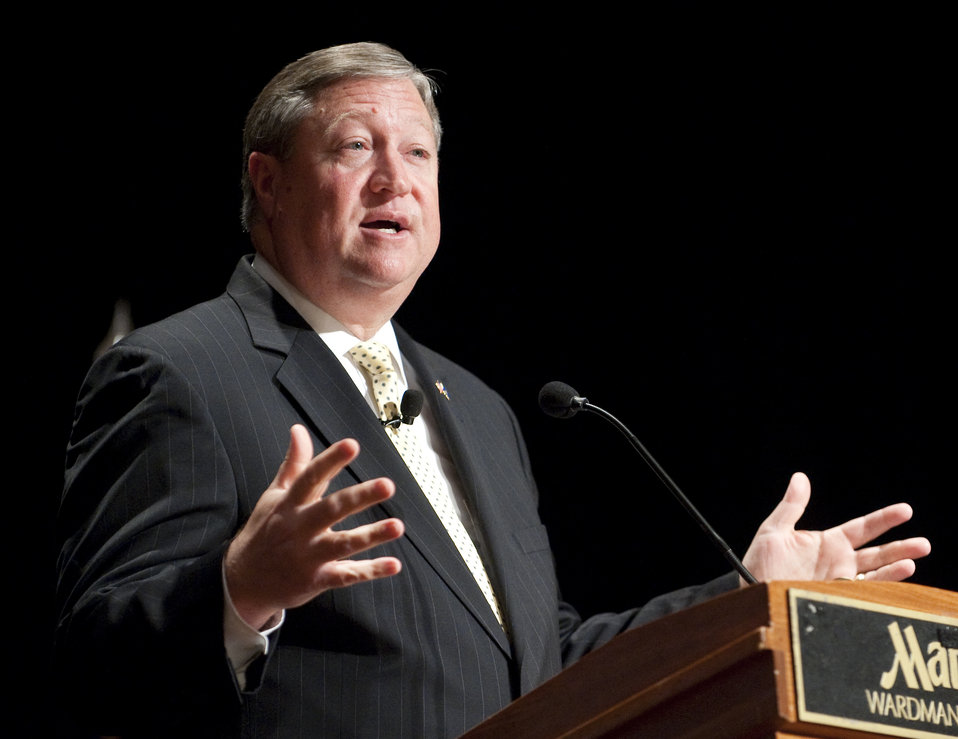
Air Force Reserve Command Senior Leader Conference

Secretary of the Air Force Michael Donley addresses Air Force Reserve Command senior leaders May 16, 2011, during their annual conference in Washington, D.C.